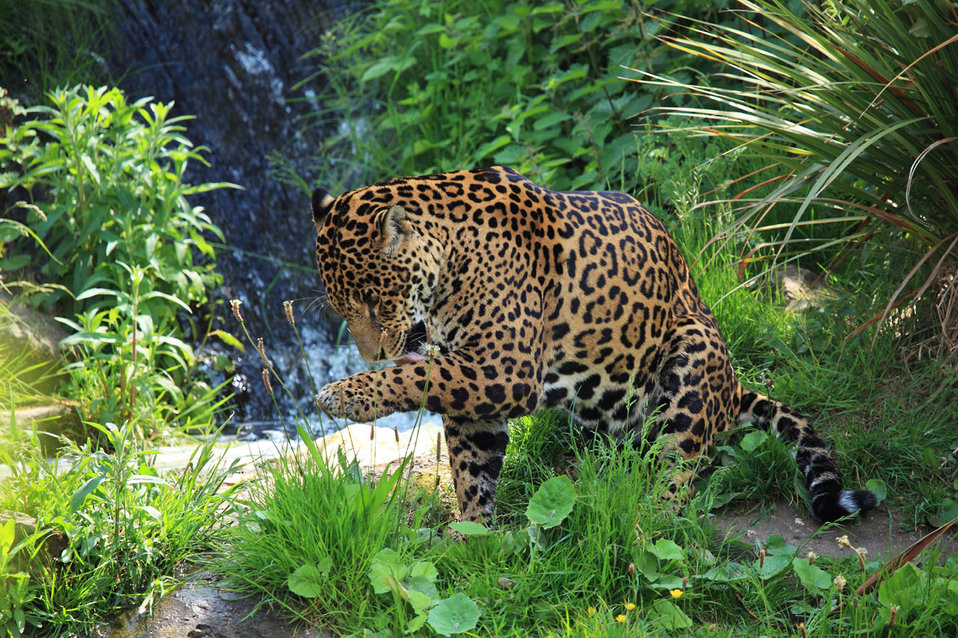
Wild jaguar

Jaguar licking its paw.